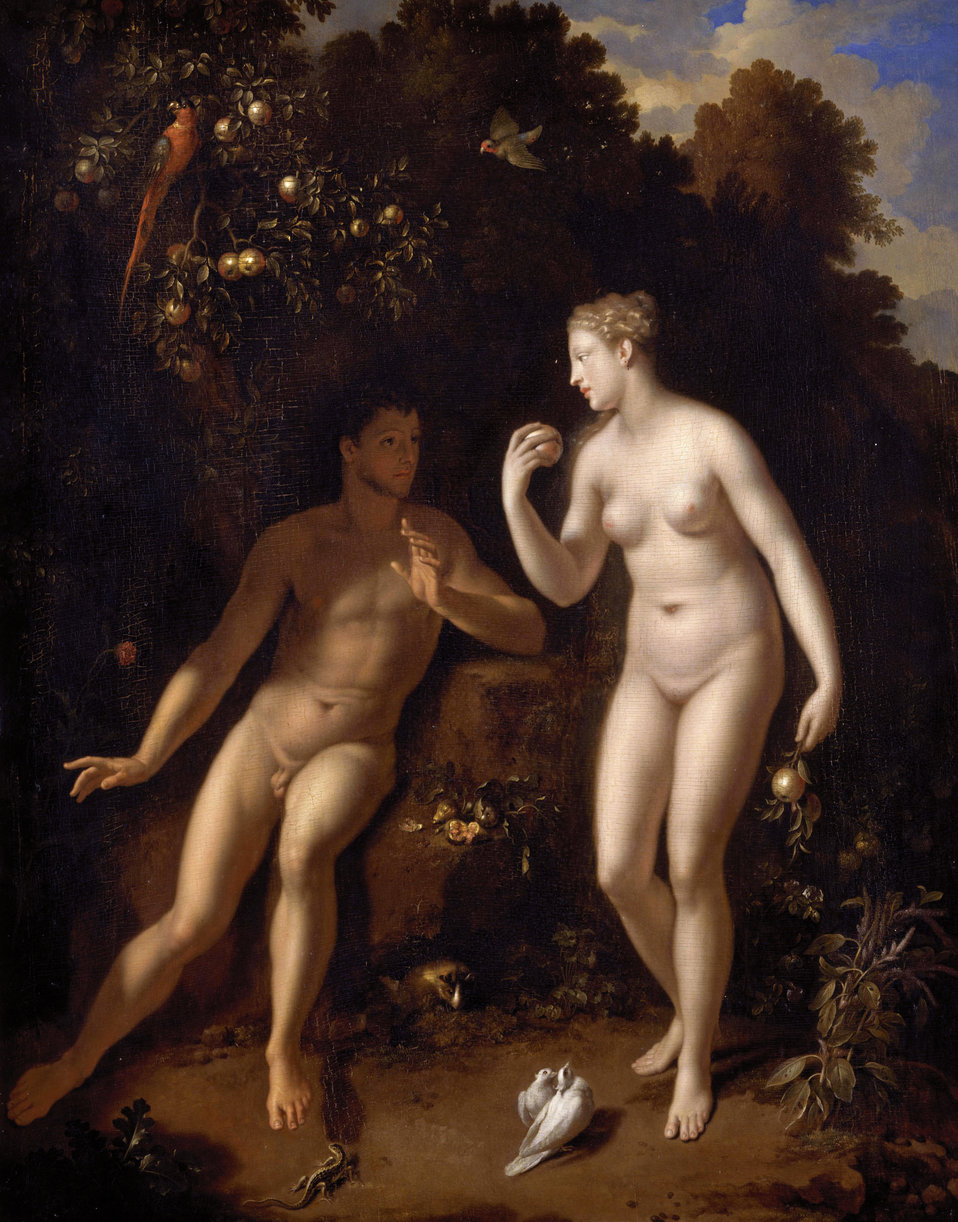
Adriaen van der Werff - Adam en Eva